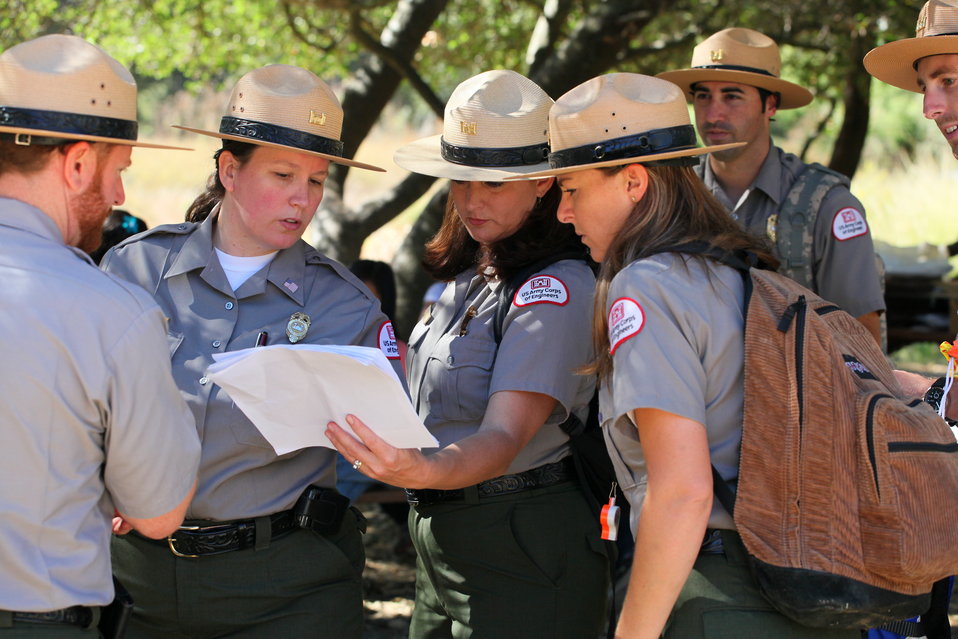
America’s Great Outdoors event at the Effie Yeaw Nature Center

U.S. Army Corps of Engineers park rangers consult a trails map at the Effie Yeaw Nature Center in Carmichael, Calif., Sept. 27, 2011. The rangers led students from Maple Elementary School on a nature hike and outdoor education activities to help them connect with the outdoors, in support of President Barack Obama’s America’s Great Outdoors Initiative, established in April 2010, to reconnect the American people with the outdoors.